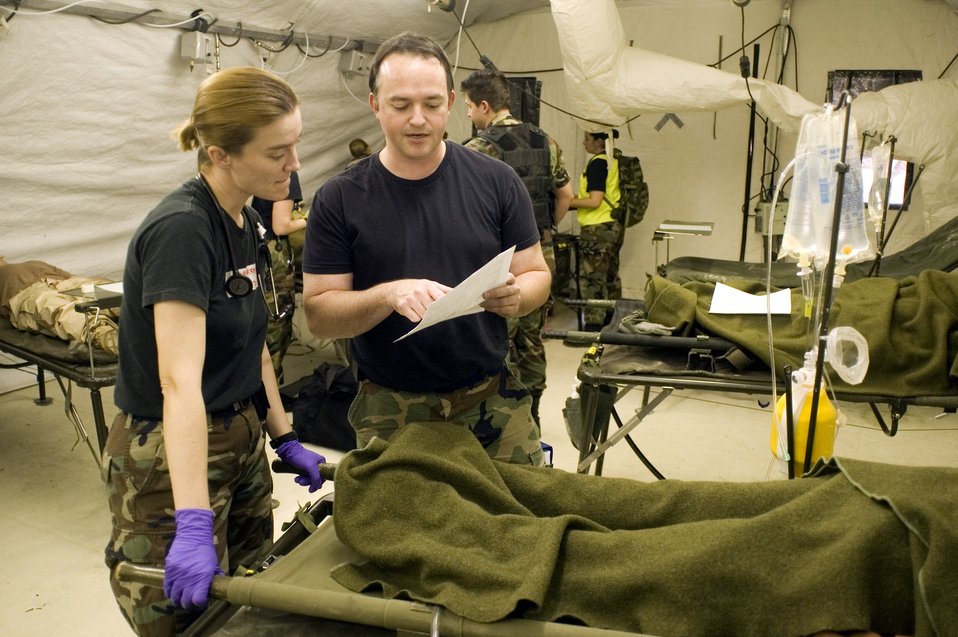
Brooks training program integrates medical processes

Expeditionary Medical Support student Capt. (Dr.) Laurie Marbas reviews critical patient information Feb. 22 with Critical Care Air Transport Team student, Maj. (Dr.) Stephen Reich prior to transferring the patient. By combining EMEDS and CCATT training, students experience handling patients from triage through transportation from a field hospital back to the states.